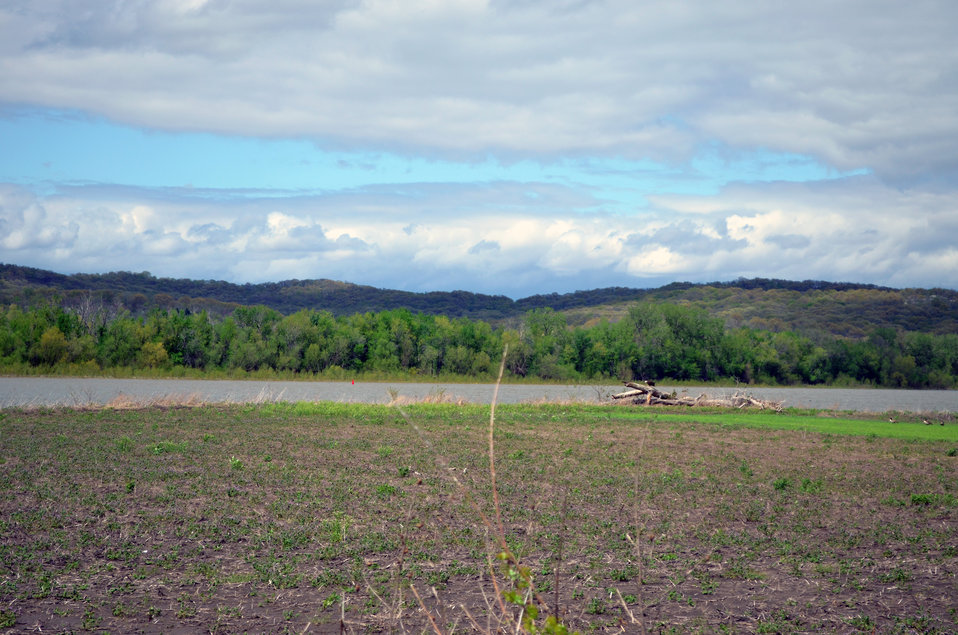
Two Rivers National Wildlife Refuge

The refuge was established in 1958 to protect and enhance habitat for migratory birds. Located between the Mississippi River and Illinois River, the refuge encompasses 9,225 acres of riverine and floodplain habitat scattered around the confluence of the rivers. It is a great place for birdwatching. Two Photo by Joanna Gilkeson/USFWS